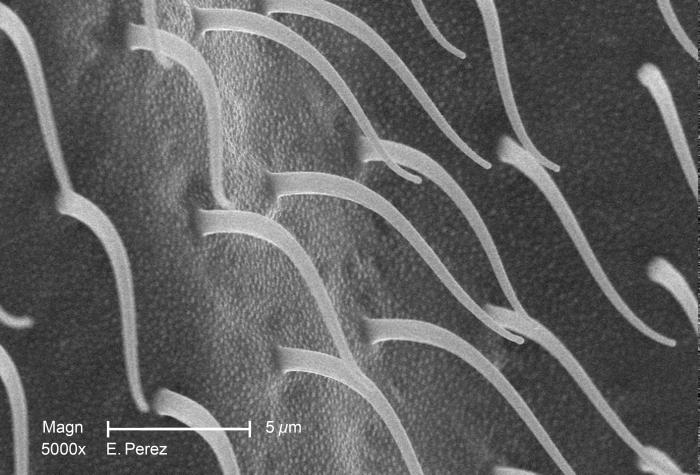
These setae, or sensorial "hairs", are sensitive to changes in the organism's environment including changes in temperature, wind speed and direction, and act as mechanoreceptors, picking up on changes to the physical make-up of its surroundings, i.e., tactile interaction. These setae, along with the insect's antennae, eyes, and wings offer the organism a detailed comprehensive depiction of its immediate environment by providing the insect with measurable changes in temperature, chemistry, and touch.